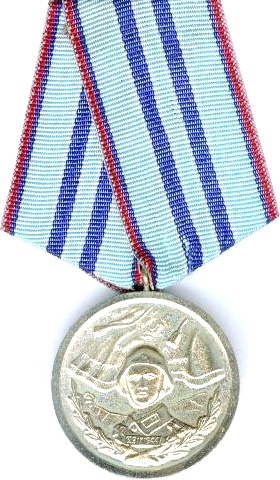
Medal For 15 Years Service To The Bulgarian People's Army.